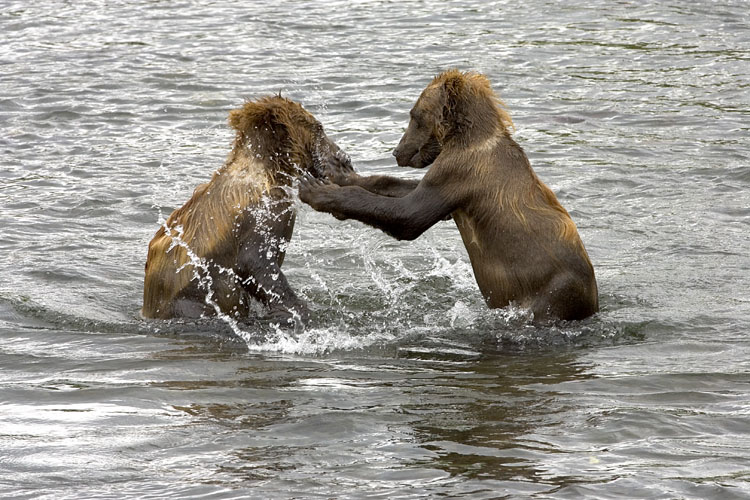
Kodiak Brown Bears

Playful Kodiak Bears